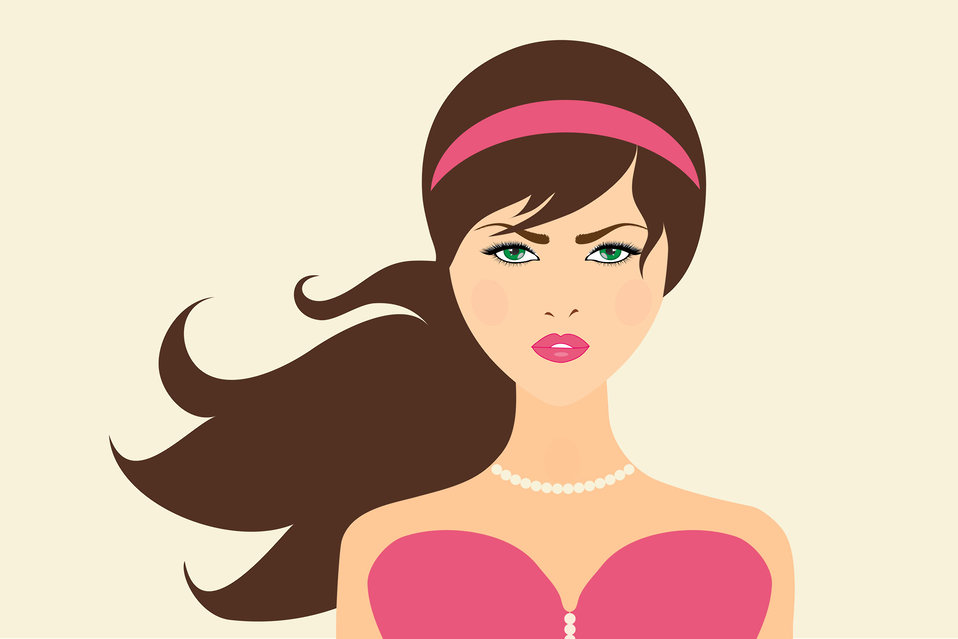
Beautiful girl brunette hair

Beautiful young woman with long brunette hair for scrapbooking.